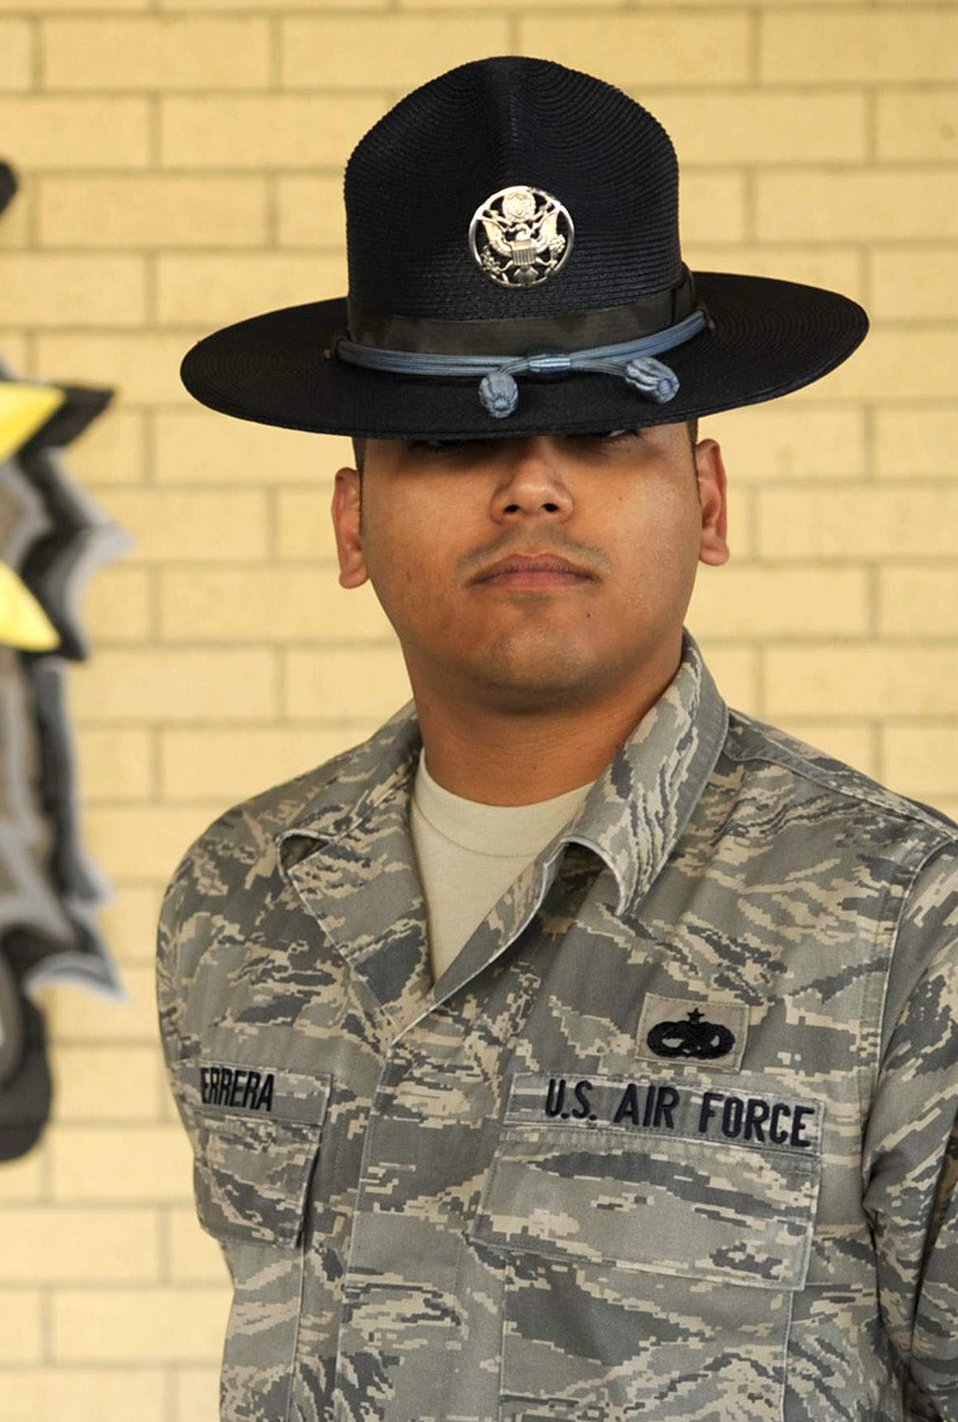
Basic training

Staff Sgt. Eddie L. Herrera Jr. is a military training instructor at Lackland Air Force Base, Texas. He is the face of the Air Force for hundreds of trainees throughout the year and molds recruits through a recently overhauled and expanded Air Force Basic Military Training that focuses on a ?warrior first? philosophy.